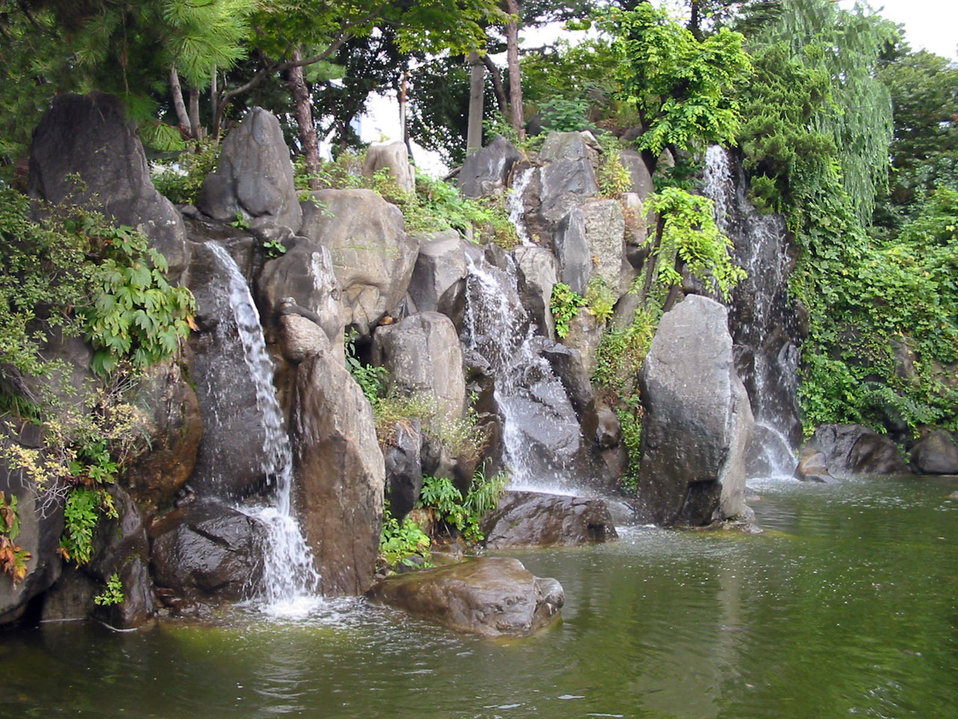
Waterfall in korea.